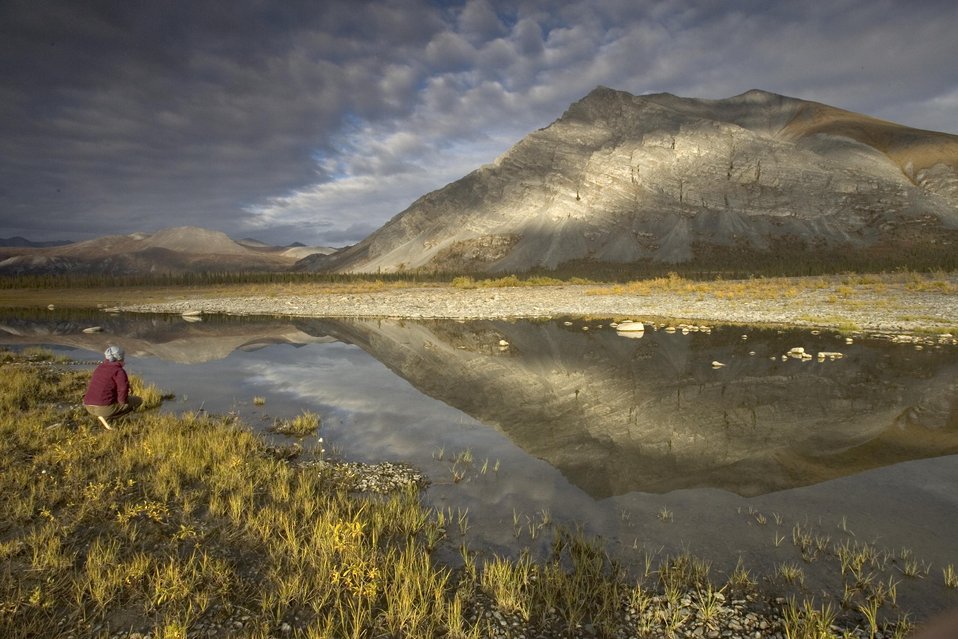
Arctic National Wildlife Refuge